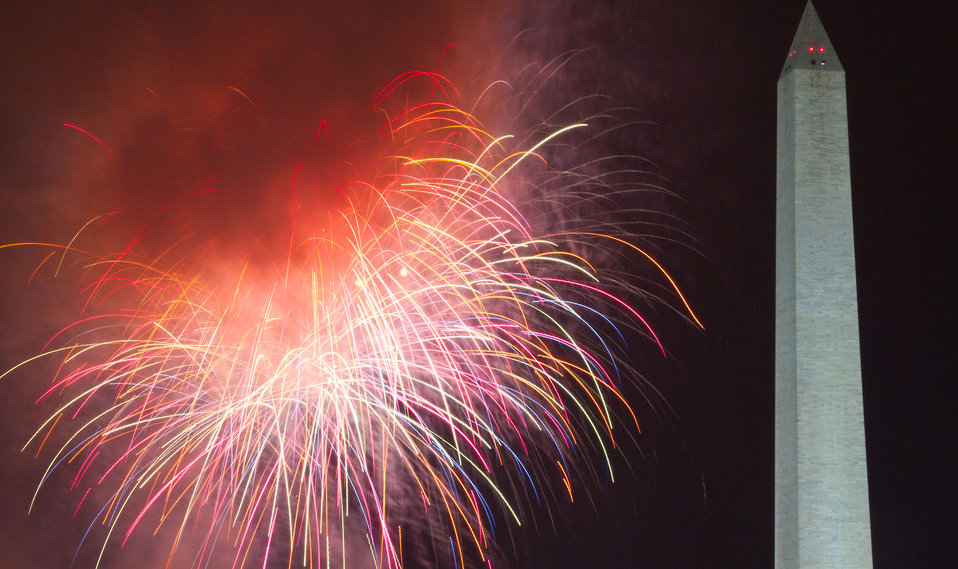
Independence Day fireworks at the National Mall, in Washington, DC, on Monday, July 4, 2011. USDA Media by Lance Cheung.